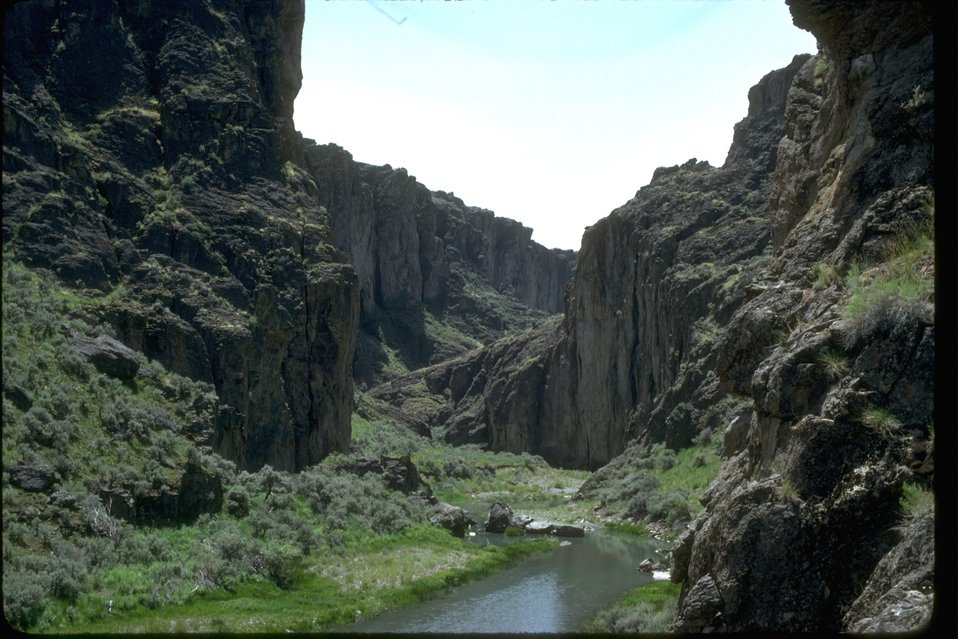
Upper West Little Owyhee Wilderness Study Area. OR 3-173